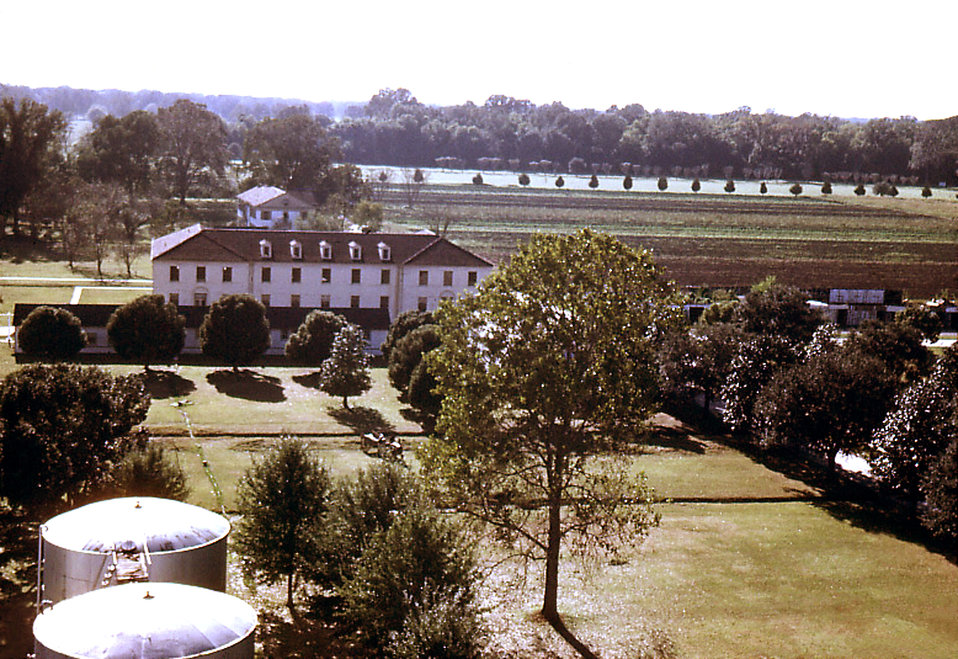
This image depicted the storehouse located at the rear of the Carville, Louisiana Leprosarium's facility, which was situated on a lot that measured 400 acres. The hospital was a self-contained compound with its own storehouse, laundry, food-processing facilities, and patient treatment center."Patients of the U.S. Marine Hospital in Carville, Louisiana, produced a set of 35 mm slides around 1950 from which this image was derived. In 2002, a patient's son donated the set, the only one known in existence, to the museum. The father, a patient at Carville for several years, brought these slides home around 1950 to give his family a snapshot of life at the national leprosarium. The act of quarantining patients for leprosy (HD) remained law in the state of Louisiana until 1957."